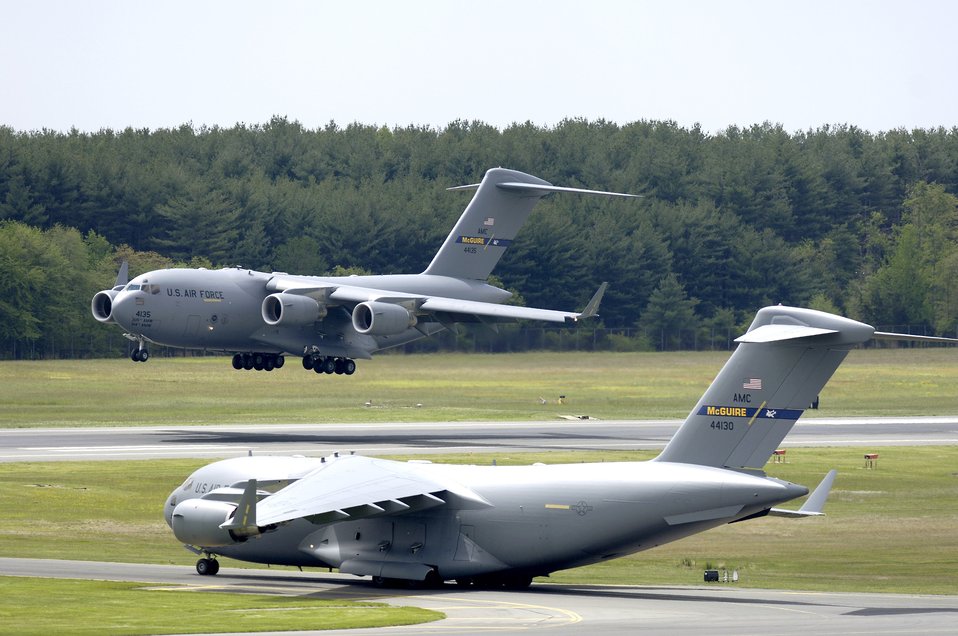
Globemaster in flight

A C-17 Globemaster III from the 305th Air Mobility Wing at McGuire Air Force Base, N.J., performs touch and go landings while another C-17 prepares for take-off on Wednesday, May 10, 2006.